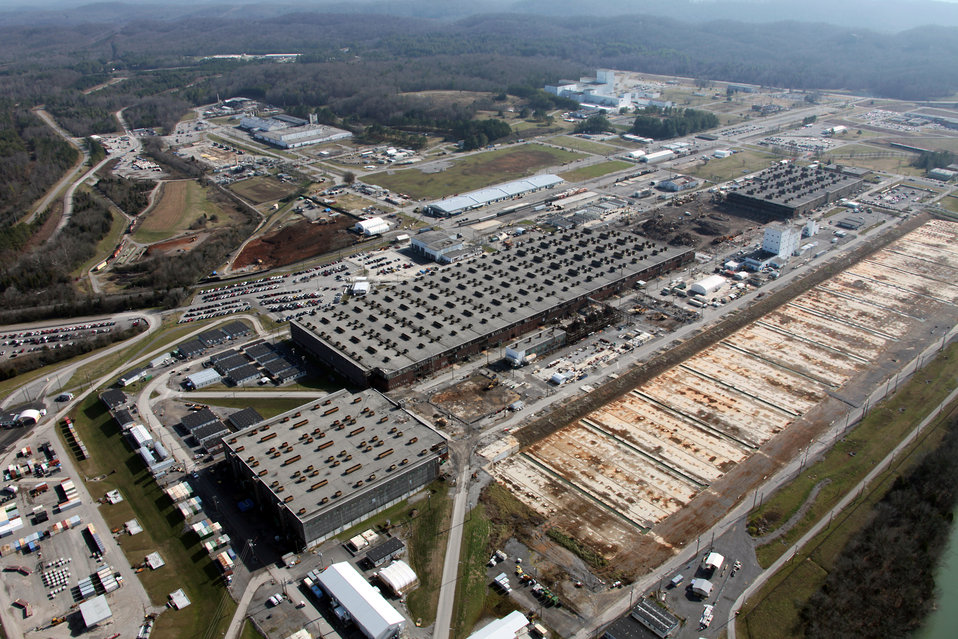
Oak Ridge Lays Out Big Plans for 2012

Employees at Oak Ridge are accelerating work at K-25’s East Wing. Sixty percent of the remaining structure is expected to be down by the end of the September 2012.